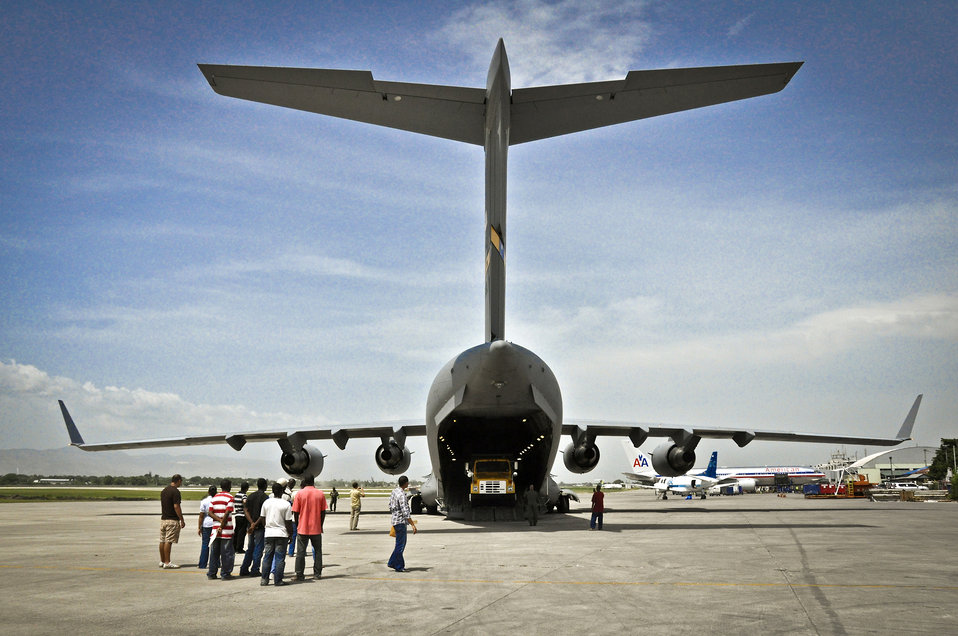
Aid to Haiti

Humanitarian-aid workers wait for a dump truck to roll off the ramp of a C-17 Globemaster III July 1, 2011, in Haiti, during an aid mission.